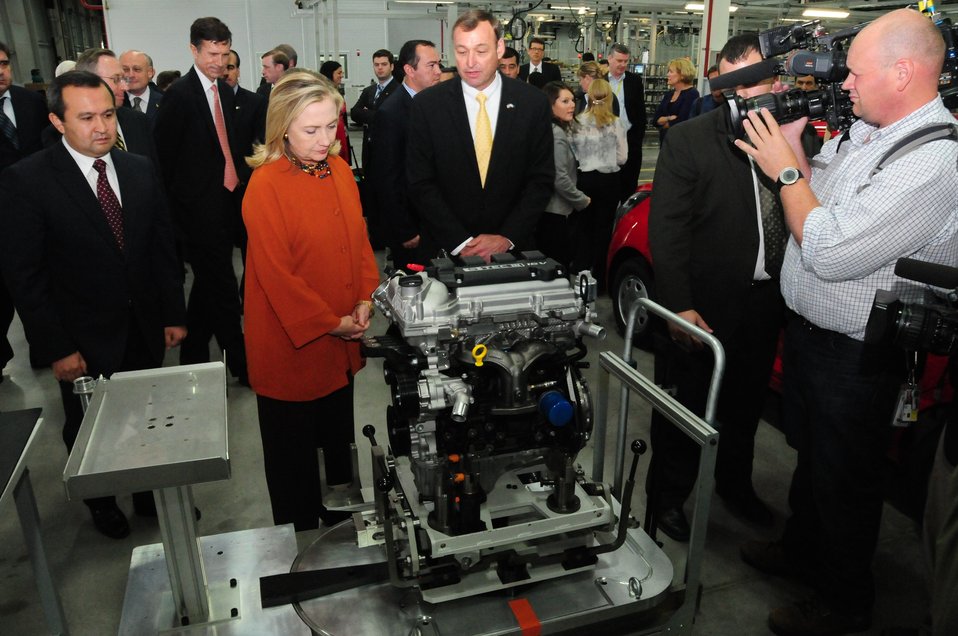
GM Uzbekistan General Director Spendel Shows a Completed Engine to Secretary Clinton and Uzbek Deputy Prime Minister Rozukulov

General Motors (GM) Uzbekistan General Director Juergen Spendel, center; shows a completed engine to U.S. Secretary of State Hillary Rodham Clinton, center left; and Uzbek Deputy Prime Minister Ulugbek Rozukulov, left; at the GM factory in Tashkent, Uzbekistan, on October 23, 2011.